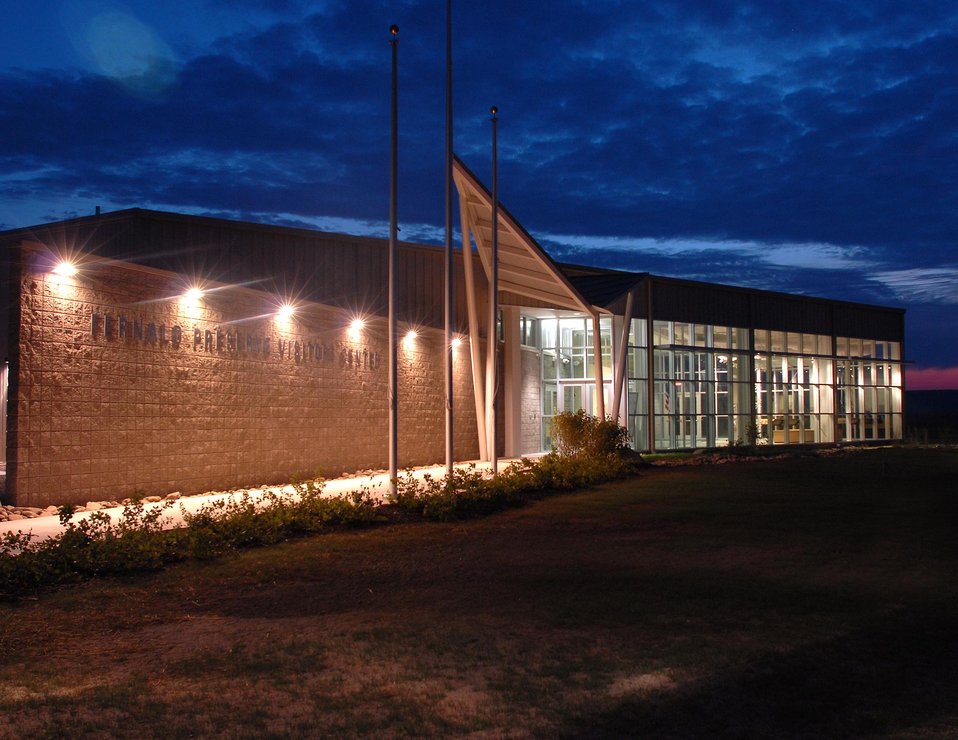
Fernald Preserve Visitor Center.